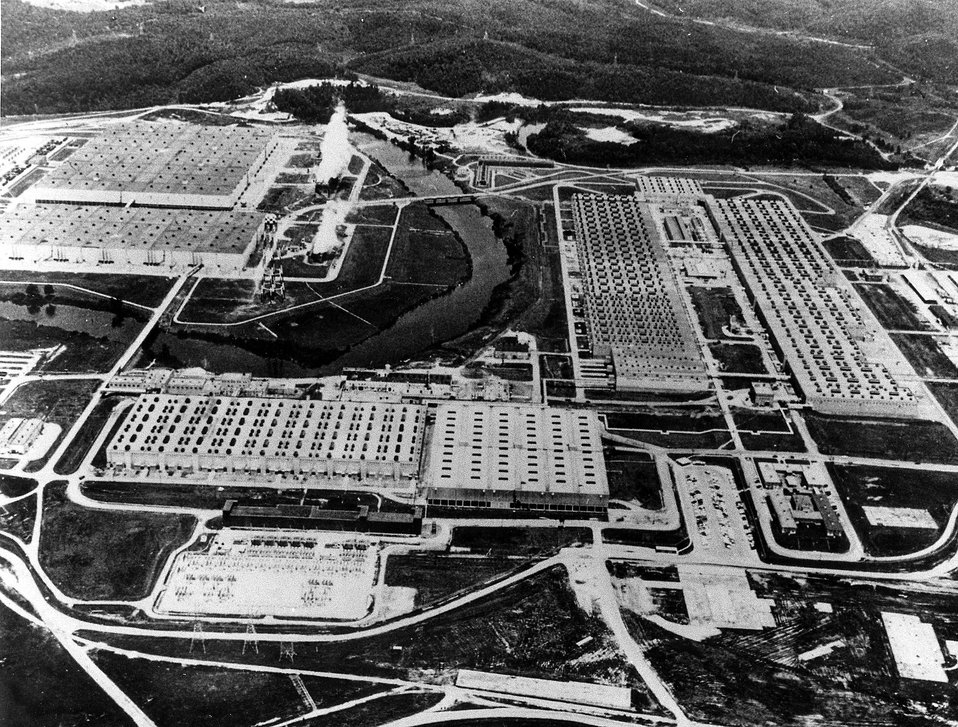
This huge plant at Oak Ridge, Tennessee, produces uranium-235 by the gaseous diffusion process. Circa 1965.